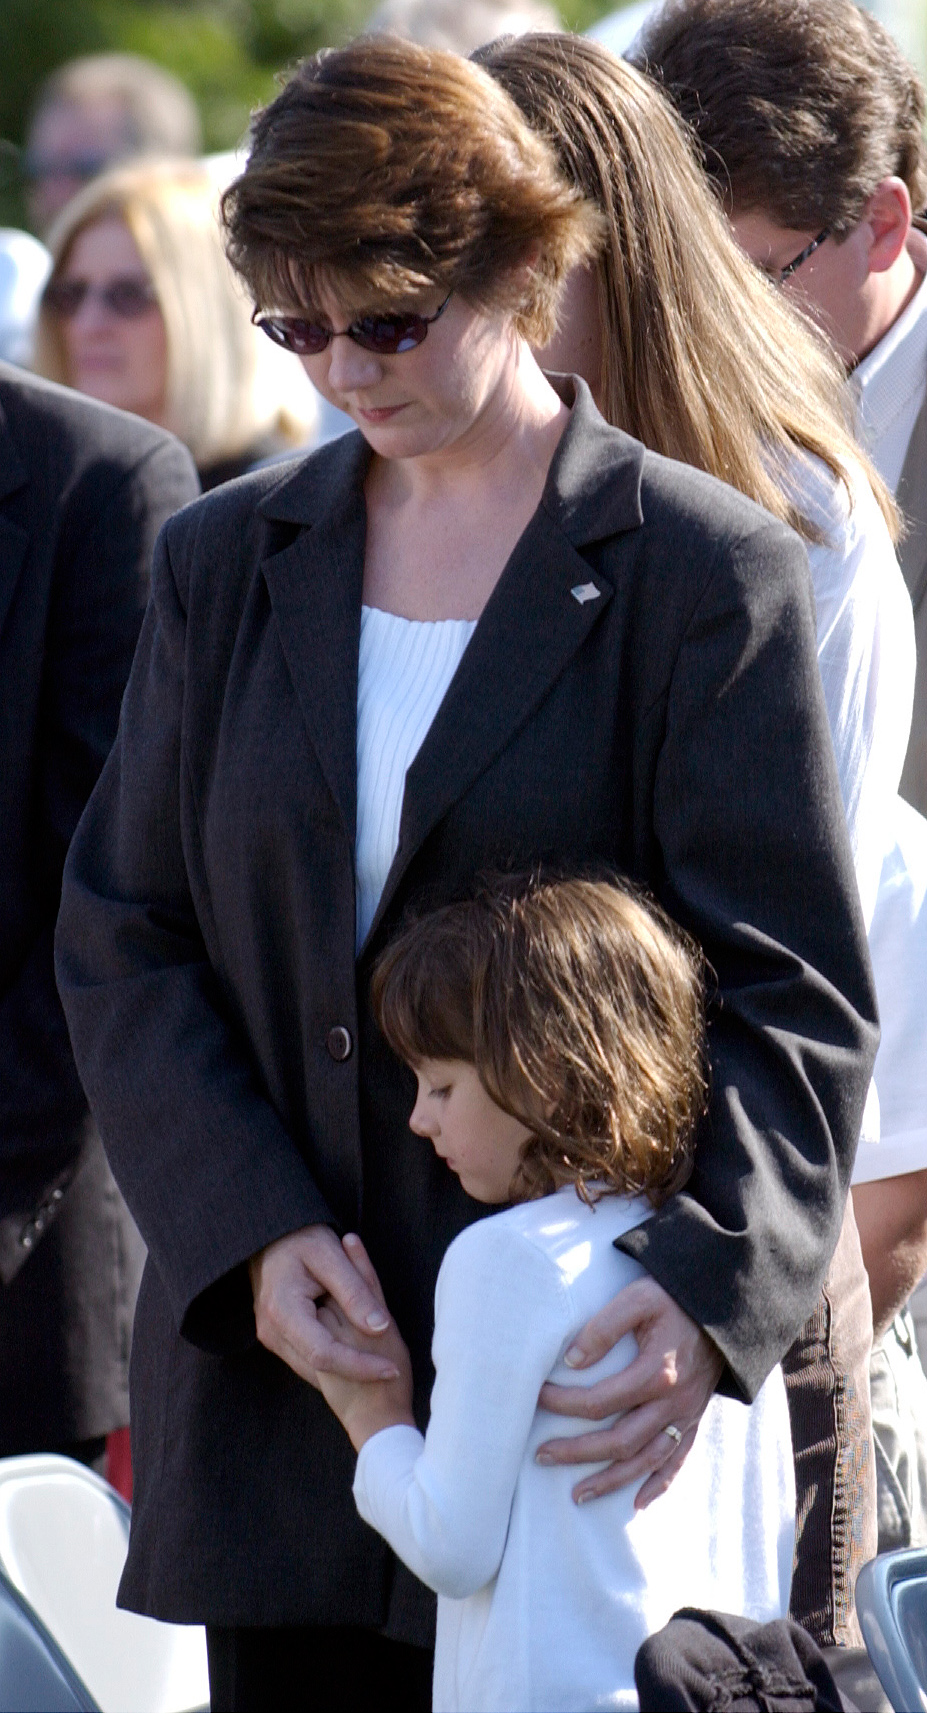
9-11 remembered

WASHINGTON -- Sierra Tisdale, 6, is comforted by her mother, Patrice, at Arlington National Cemetery during a memorial service Sept. 11. The service honored the victims of the terrorist attack on the Pentagon. Of the 184 people who died at the Pentagon, 64 are buried in the cemetery.